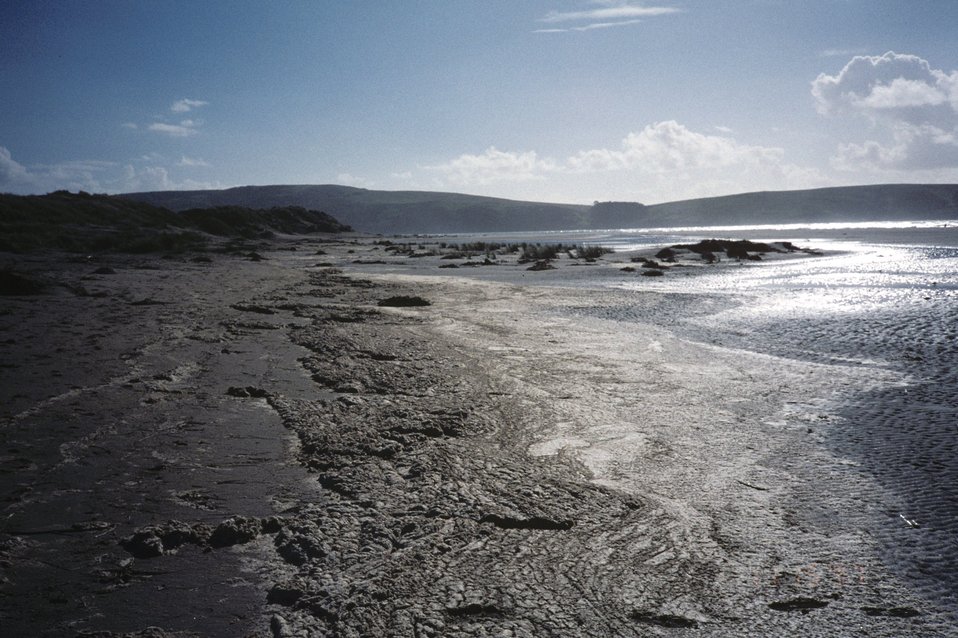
Dillon Beach